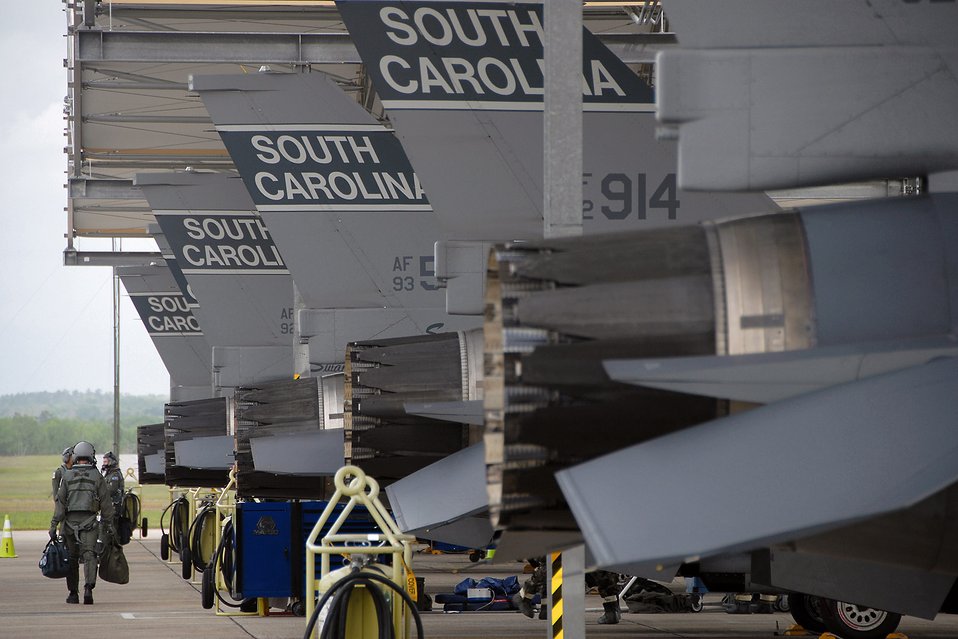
Ready to roll

After their mission April 12, pilots leave F-16 Fighting Falcons at McEntire Joint National Guard Base, S. C. The South Carolina Air National Guard's 169th Fighter Wing is undergoing a phase 2 operational readiness evaluation to determine its ability to launch missions while in a chemical warfare environment.